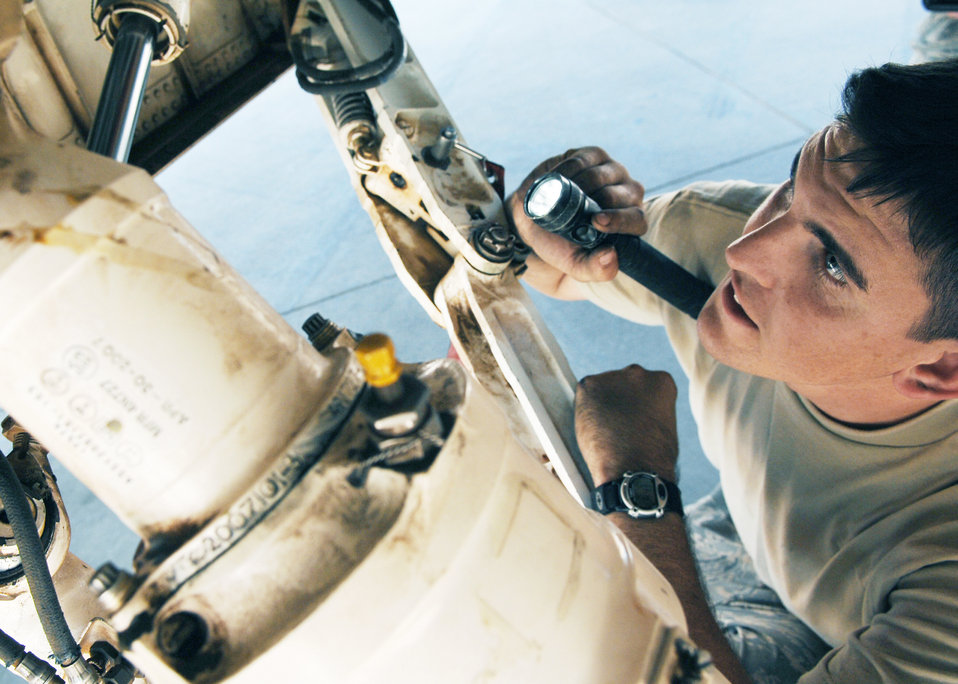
Shedding light on a subject

Airman Adam Osgood scans the underside of an F-16 Fighting Falcon while performing a routine inspection Sept. 24, 2009, at Joint Base Balad, Iraq. Airman Osgood is a 332nd Expeditionary Aircraft Maintenance Squadron crew chief deployed from Spangdahlem Air Base, Germany.